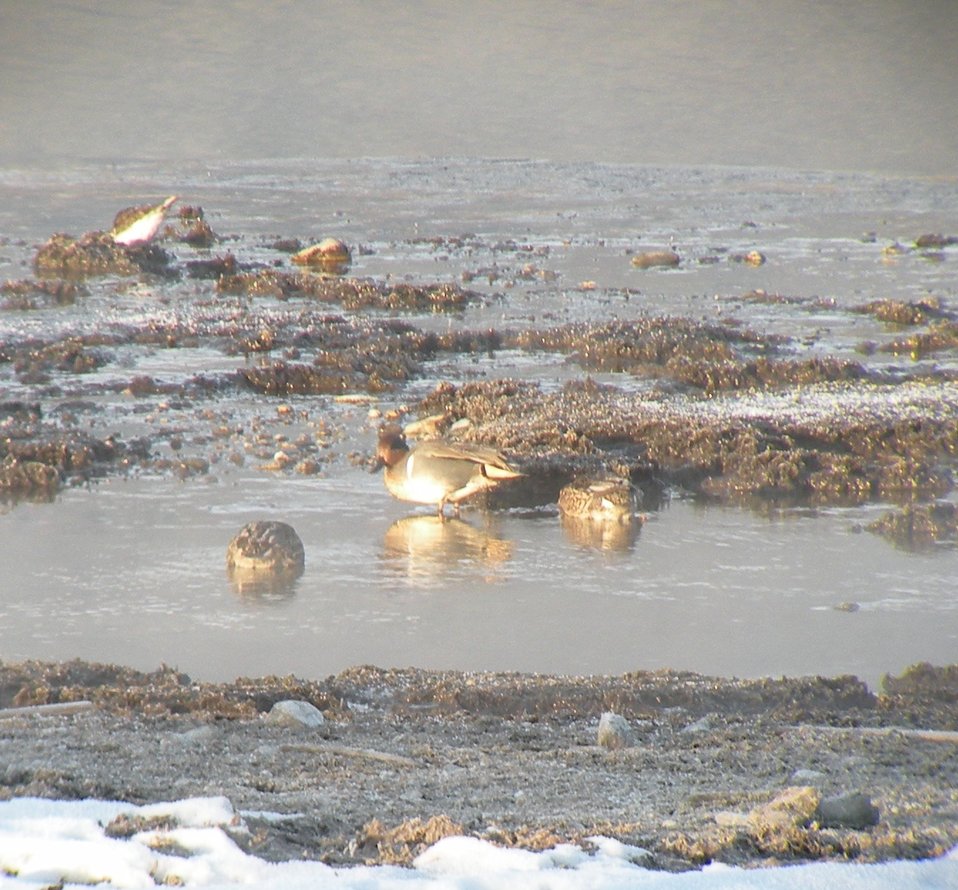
Green-winged Teal

Waterfowl feeding in shallow waters of Pond 6 on Lee Metcalf National Wildlife Refuge.